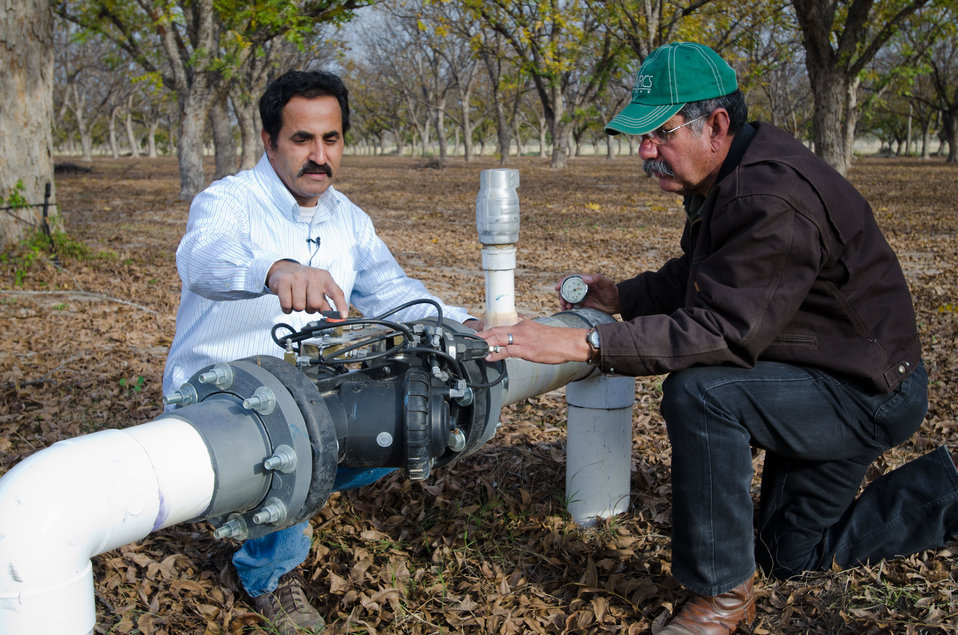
Arrowhead Farms owner Mr. Akram Mohammad (left) talks with Natural Resources and Conservation Service (NRCS) District Conservationist J.M. Villarreal (right) about the pressure control valves used at the pecan farms in Crystal City, TX, on Friday, December 9, 2011. The 719 acre farm with 10,000 trees, features two orchards with underground micro irrigation system that feeds water to the roots of 4,380 pecan trees on 146 acres. Mr. Mohammad said, “USDA (U.S. Department of Agriculture) was essential to my business and trees surviving the recent exceptional drought. The trees were stress free thanks to underground micro-irrigation. This is essential to the future growth of Texas agriculture and good for America.” U.S. Department of Agriculture’s (USDA) Environmental Quality Initiative Program (EQIP) awarded Mr. Mohammad a $130,000 grant in 2008. He provided $26,000 for the balance of the $156,000 total cost to install a 146-acre underground micro-irrigation for 4,380 trees.